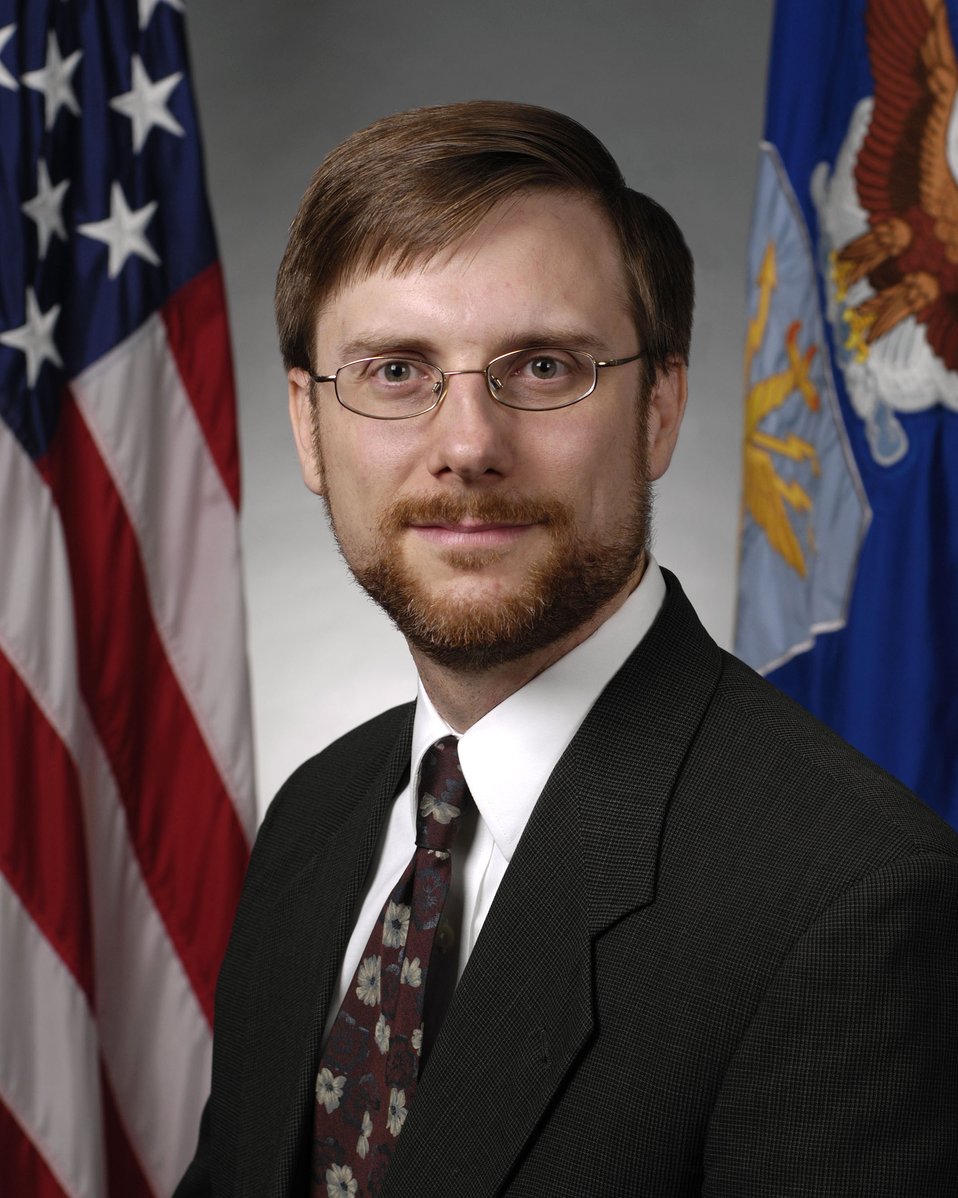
Senior Leader Appointment

President Barack Obama has appointed Dr. Jamie Morin as the Acting Under Secretary of the Air Force. He has served as the Assistant Secretary of the Air Force for financial management and comptroller.